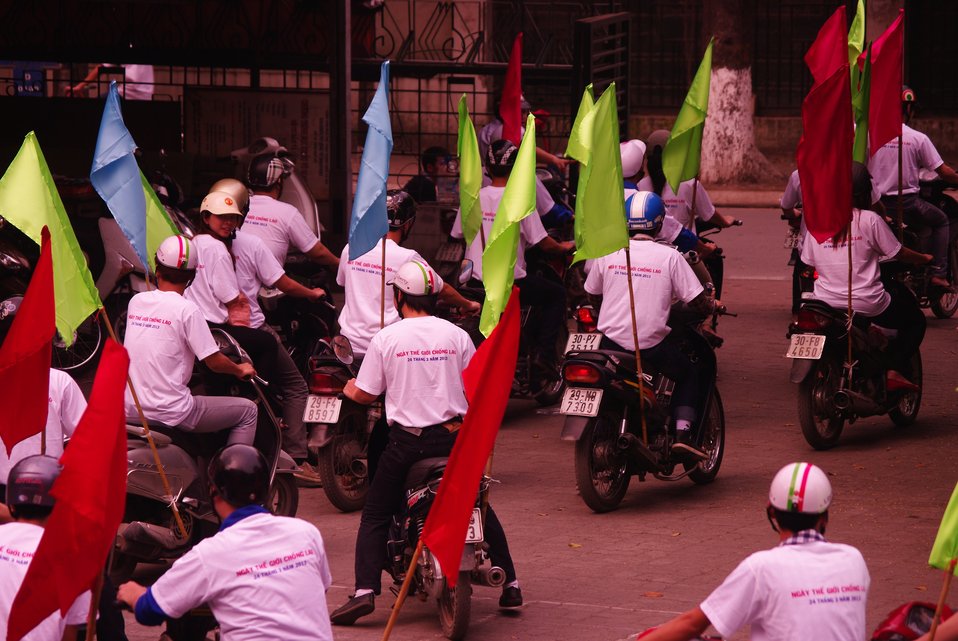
IMWorld TB Day in Hanoi: Students take to the streets with the message: Let's Stop TB in our LifetimeGP8135

March 23, 2013